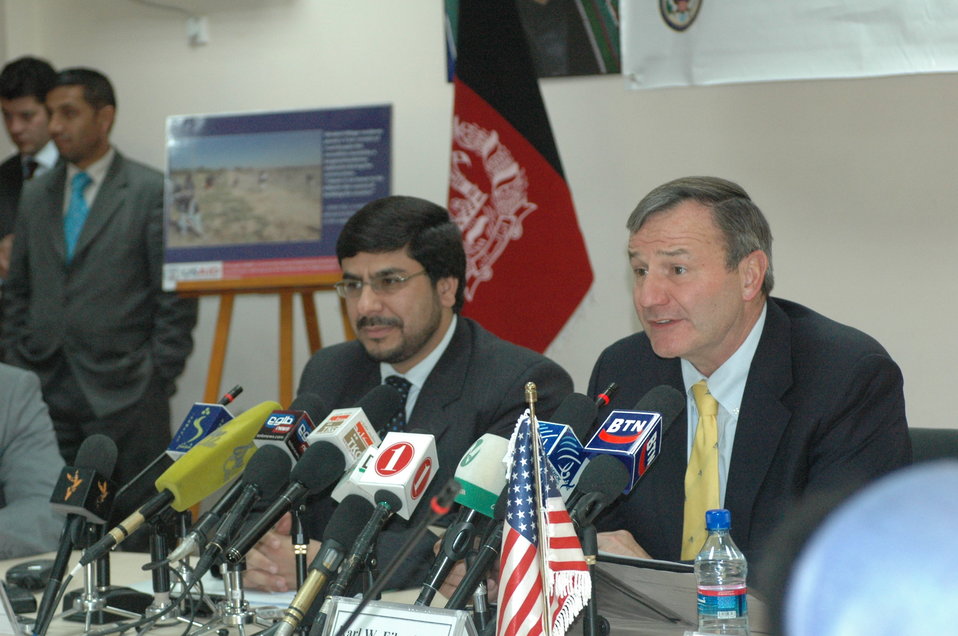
Community Based Stabilization Grants Ceremony, December 7, 2010